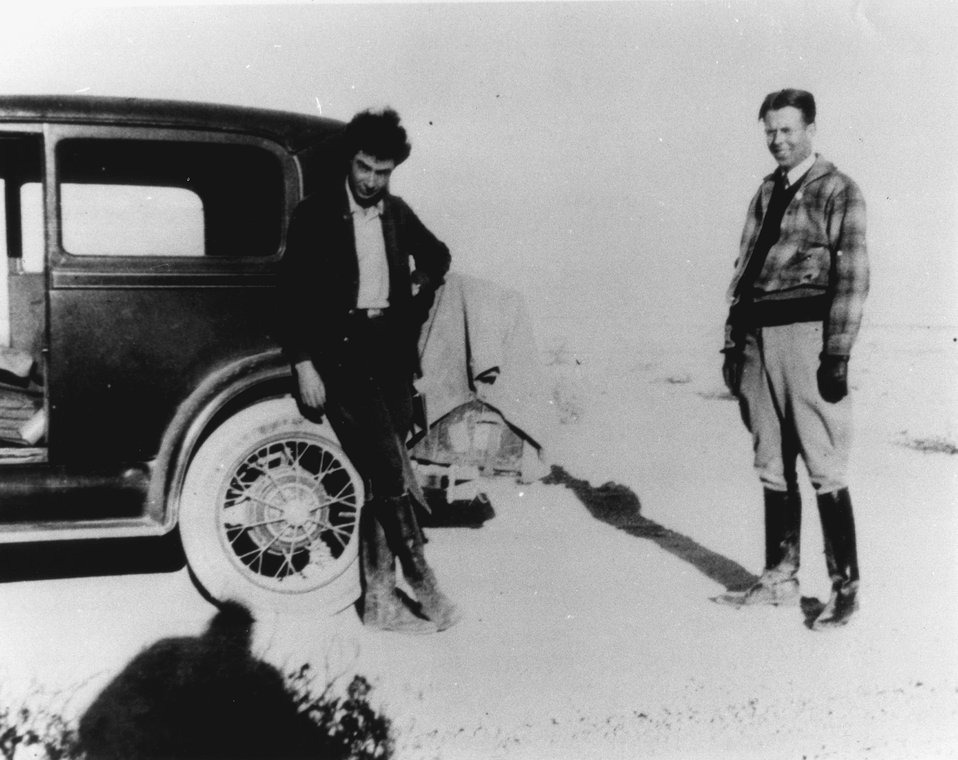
J. Robert Oppenheimer and Ernest O. Lawrence forged a bond of friendship as young scientists at Berkeley. Here they are on holiday in the early 1930s at Perro Caliente, Oppenheimer's 'ranch' (a house on six acres with a stream) located in a mountain meadow northeast of Santa Fe, New Mexico. Translated, Perro Caliente means 'hot dog,' Oppenheimer's exclamation when he learned he could lease the property. c. 1930s